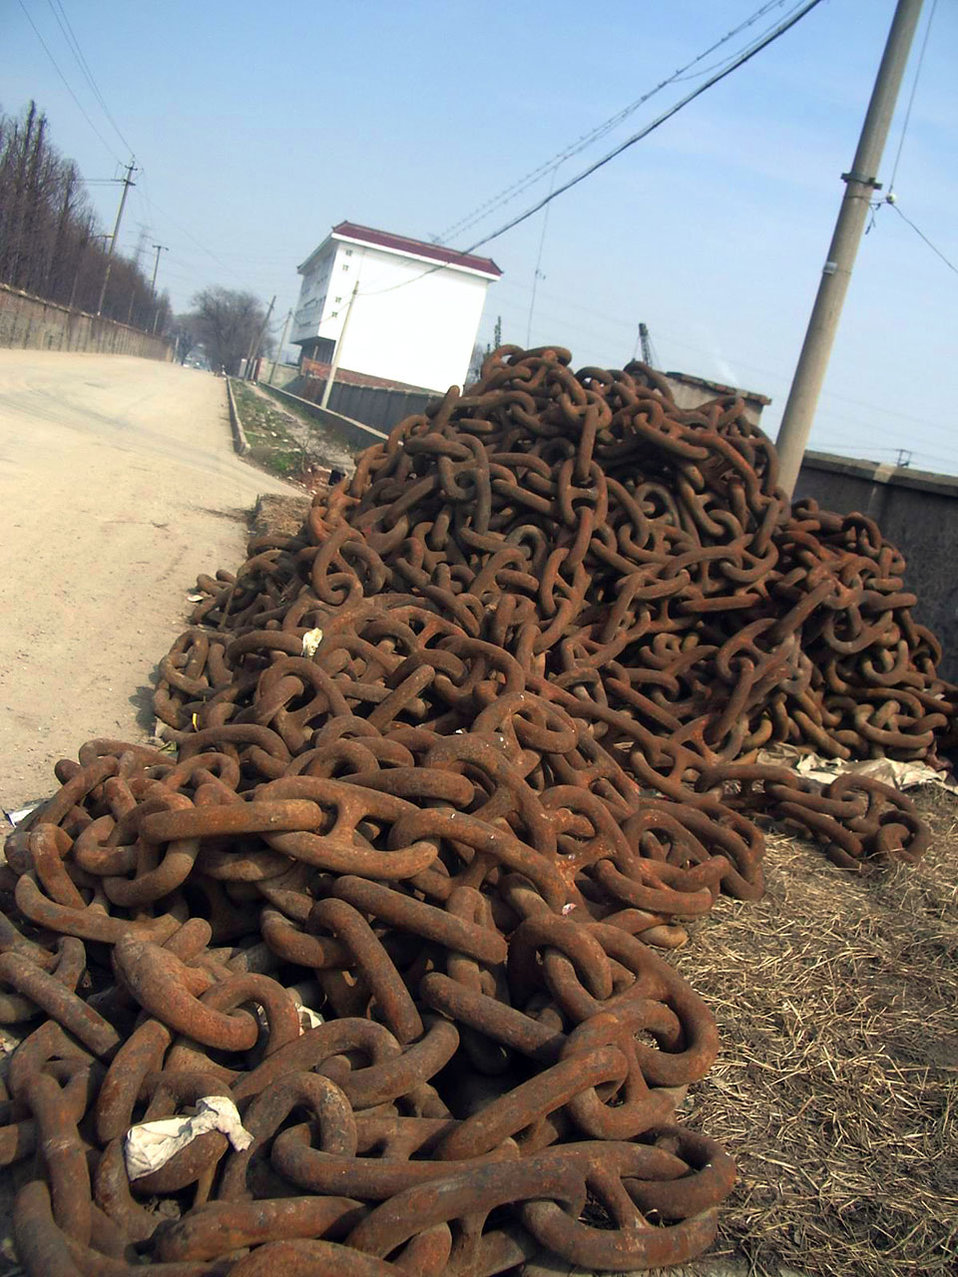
Chain

Rusty chain.